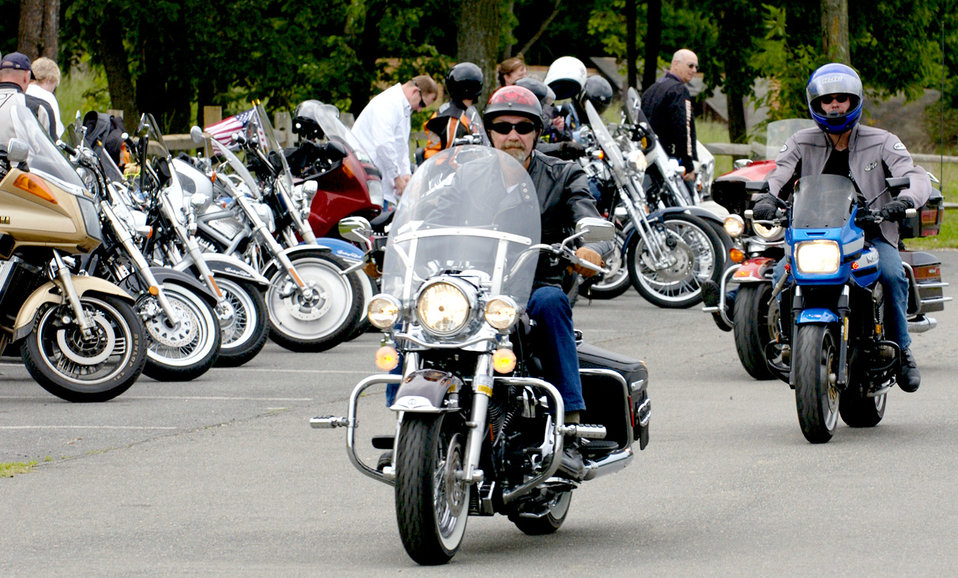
Motorcycle safety forum held at Andrews

ANDREWS AIR FORCE BASE, Md. -- Motorcyclists with a riding club at Moody Air Force Base, Ga., head out after attending a motorcycle safety forum here May 28. Riders Air Force-wide gathered with officials from the Motorcycle Safety Foundation and senior officials from various Air Force safety offices to share some insights into safety issues affecting Airmen who ride motorcycles.